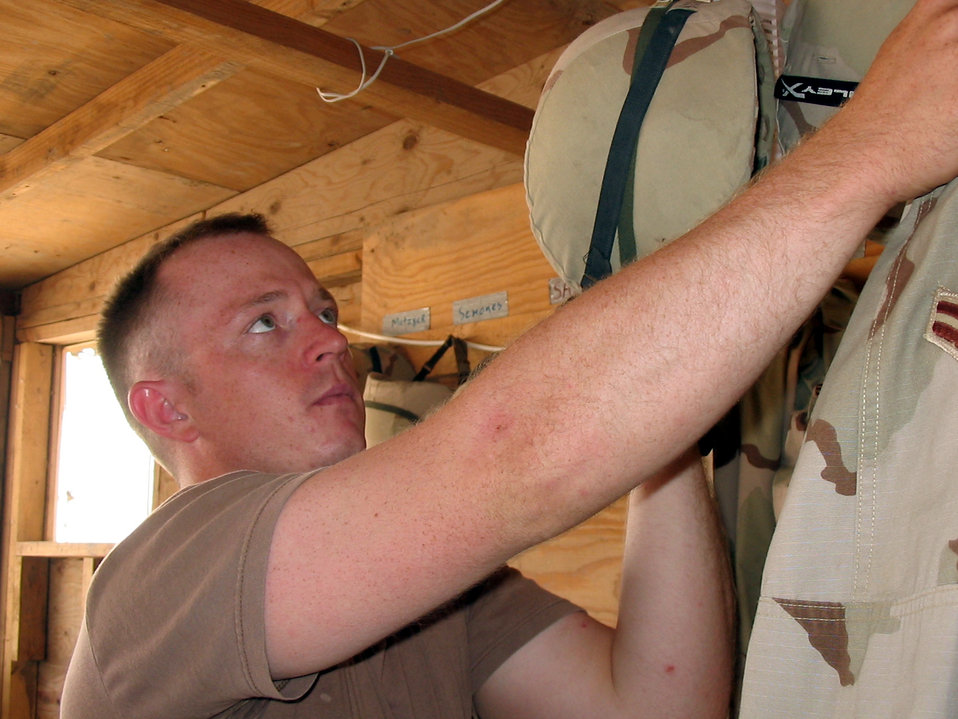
Time to go

TALLIL AIR BASE, Iraq -- Airman 1st Class Ryan Bigelow grabs his helmet and shirt before rushing out the door to refuel coalition helicopters. Airman Bigelow is one of 16 Airmen assigned to the U.S. Army's Forward-Area Refueling Point here.